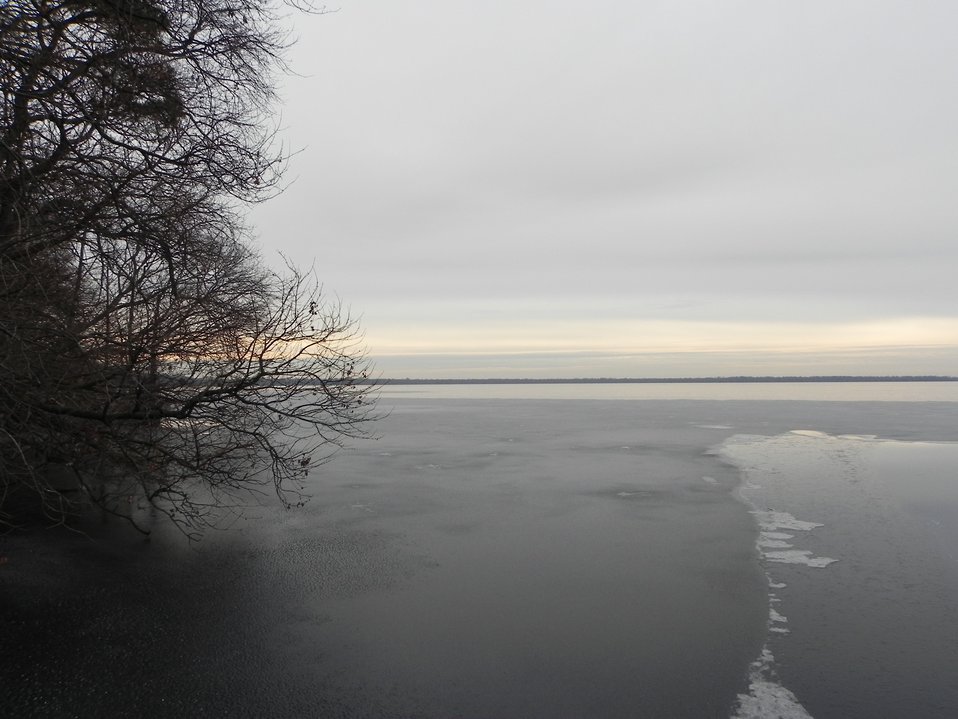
Frozen Lake

Great Dismal Swamp National Wildlife Refuge, VA.